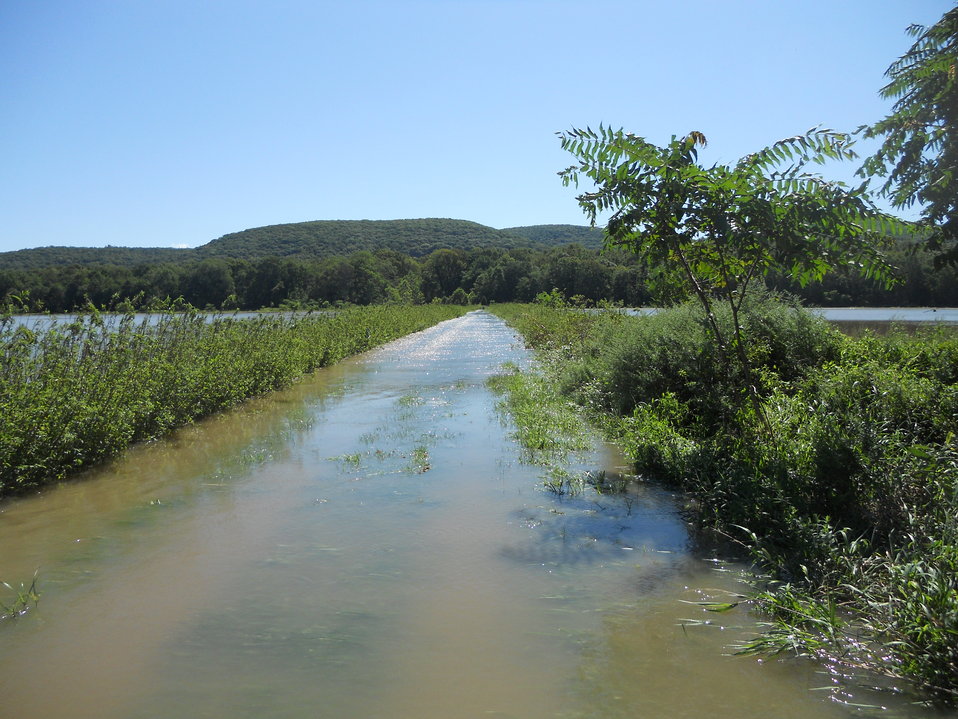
Hurricane Damage at Wallkill River National Wildlife Refuge August 30, 2011

Flooding at Liberty Loop Trail and impoundments, Sussex, NJ.